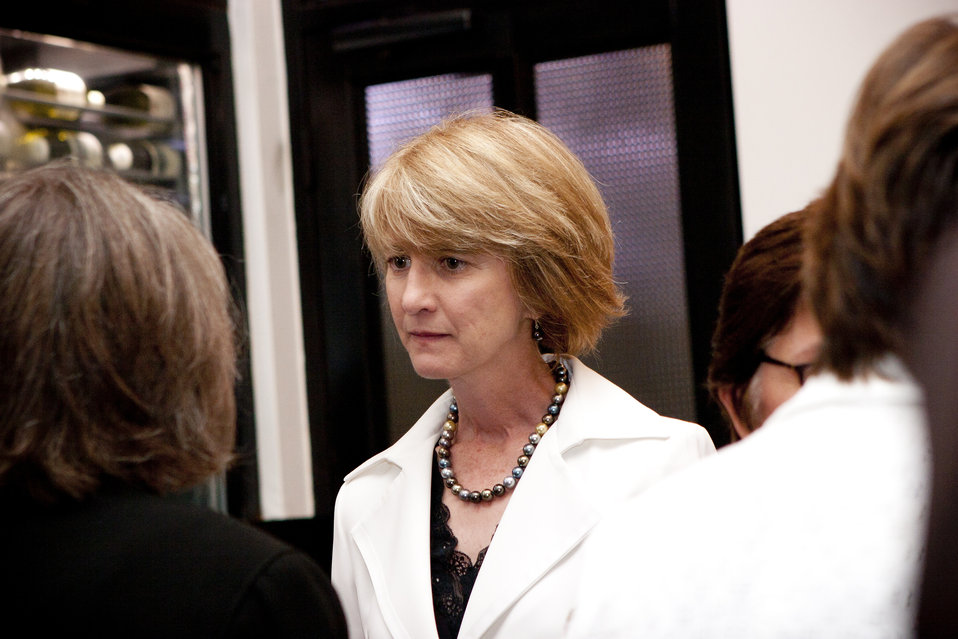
WomenandEnergy 40